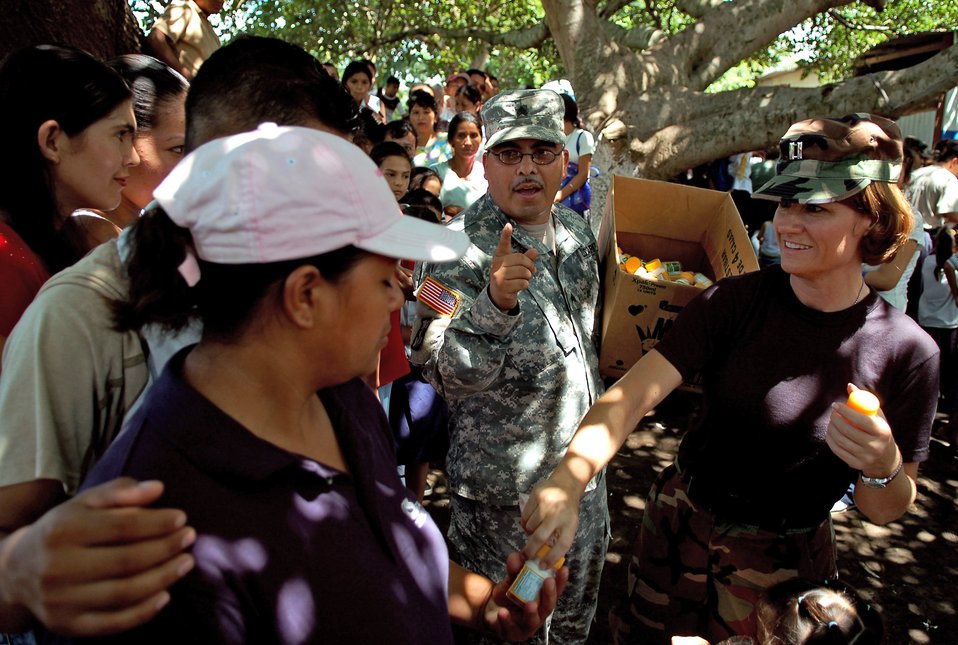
JTF-Bravo participates in El Salvador MEDRETE

Capt. Tracie Swingle and Army Sgt. Sergio Lopez hand out, and explain usage of, vitamins to a line of locals Sept. 27 at a makeshift clinic in San Juan Opico, El Salvador, during a medical readiness training exercise. Captain Swingle and Sergeant Lopez are members of the Joint Task Force-Bravo Medical Element. Salvadorian militaries and JTF-Bravo members participated in the exercise.